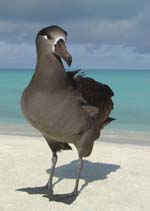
Black Footed Albatross - Kilauea Point NWR

Black-footed albatrosses are occasionally seen at Kilauea Point. Their plumage is mostly dark though they can have up to 10% white plumage.